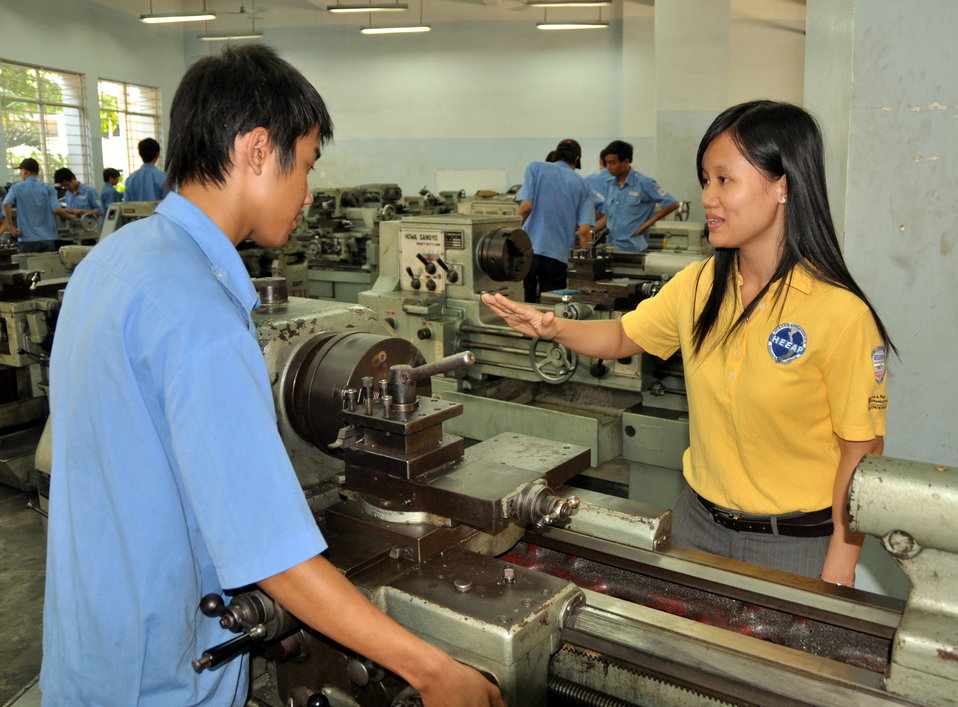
HEEAP Partner, Cao Thang Technical College

Ta Ngoc Y Thien, one of the faculty trained under the USAID-supported HEEAP program
Ho Chi Minh City, January 12, 2013